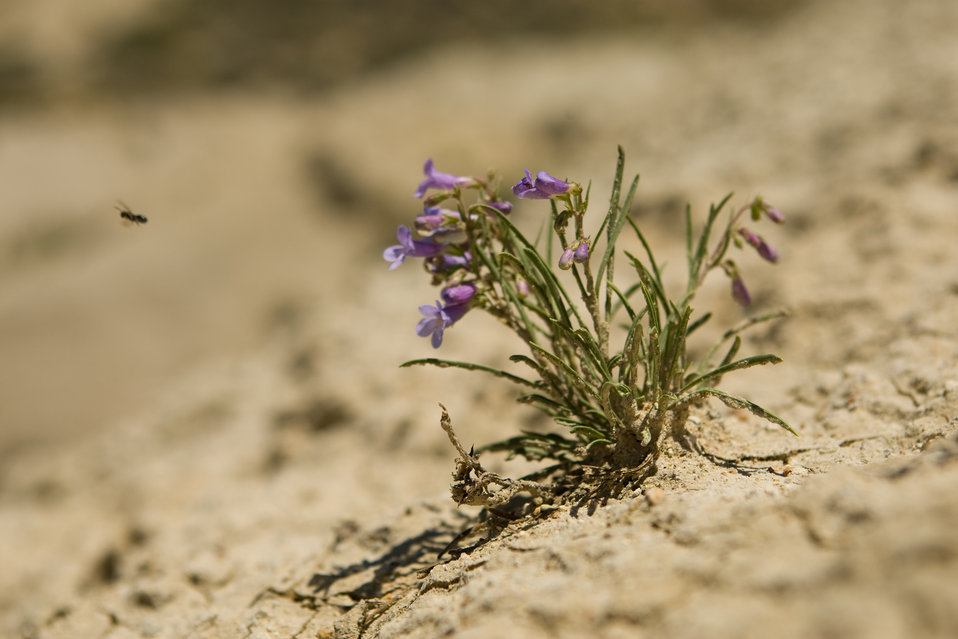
Colorado Rare Plant Conservation Initiative

The Colorado Rare Plant Conservation Initiative (RPCI) is a partnership of 23 statewide and regional agencies, private organizations, and academic institutions working to conserve 121 rare plants in Colorado. As part of these efforts the group developed the Colorado Rare Plant Conservation Strategy, developed Best Management Practices to reduce energy development impacts, addressed climate change, and developed focused strategies for the conservation of individual species at eight priority landscapes. The group has also worked to coordinate volunteer efforts for plant conservation across the state.